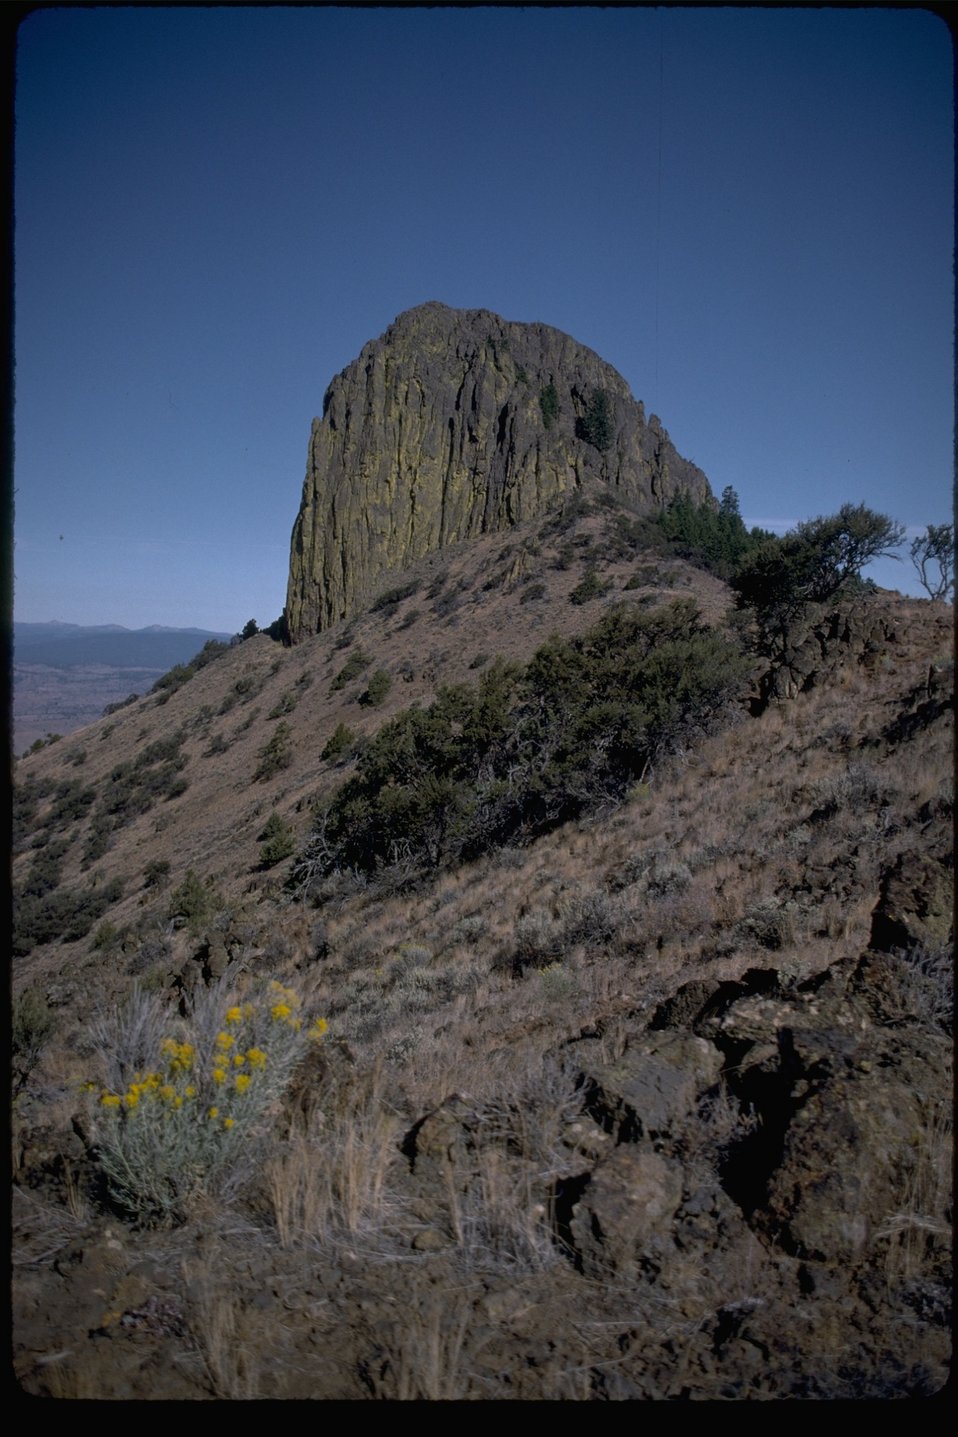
A dark view of Castle Rock. WSA OR 3-18.